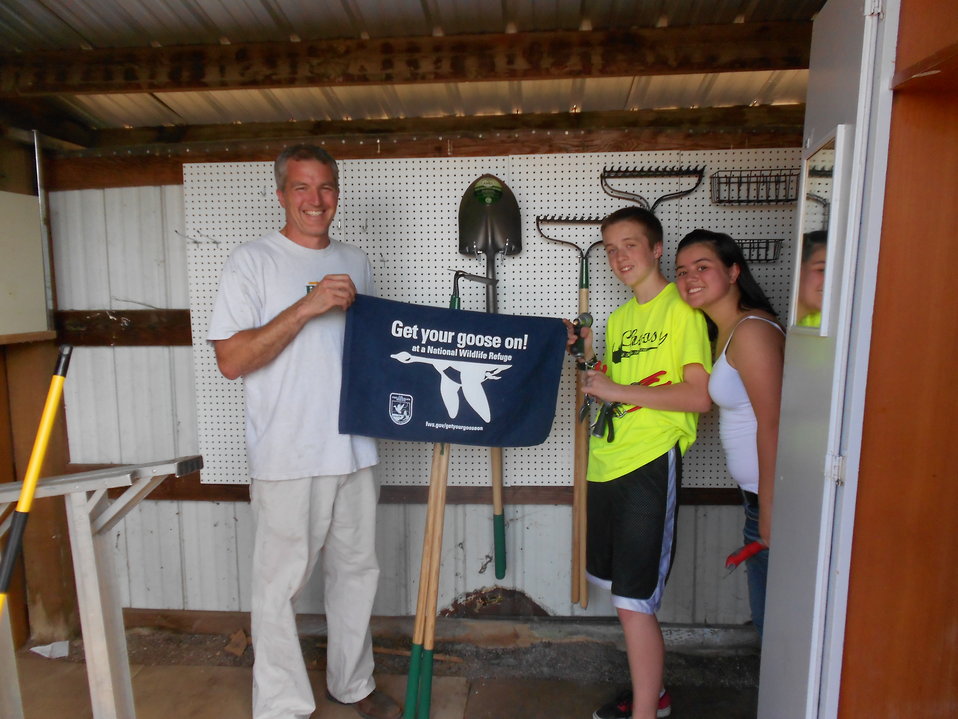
GYGO! Veggie Maniacs Style

Teacher and students at Pacific Middle School in Vancouver Washington - Mr. Carlson initiated a Schoolyard Habitat Program and received a grant from the USFWS. The Veggie Maniacs (the school's after-school gardening group) started work cleaning up the shed and garden.